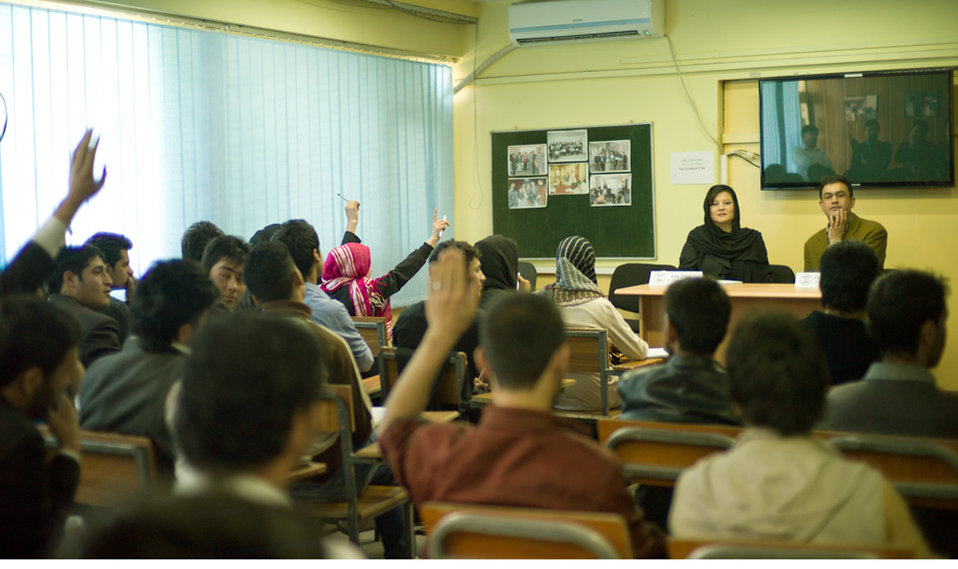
Show of hands